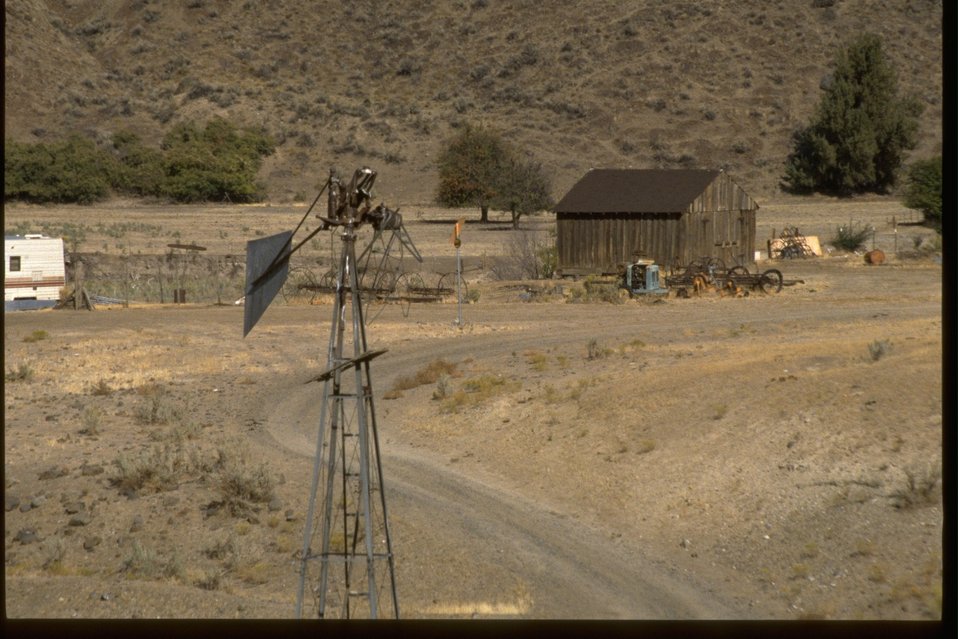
Private buildings along the John Day River near 30 Mile WSA. (1in a series of 3)